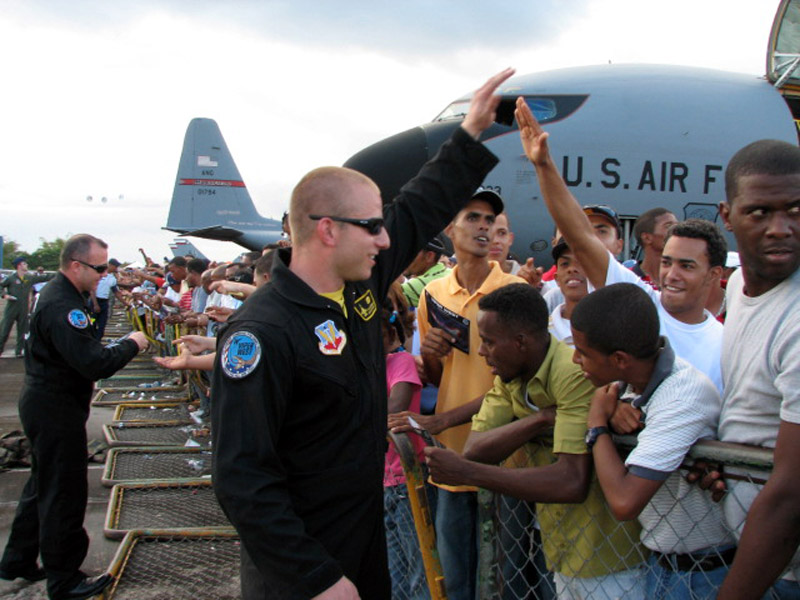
Dominican Republic air show

Airmen participating in the Dominican Republic air show Feb. 17 greet aviation fans. U.S. Airmen and Coast Guardsmen joined with their Dominican counterparts in commemorating the 60th Anniversary of the Dominican air force with an impressive airshow.